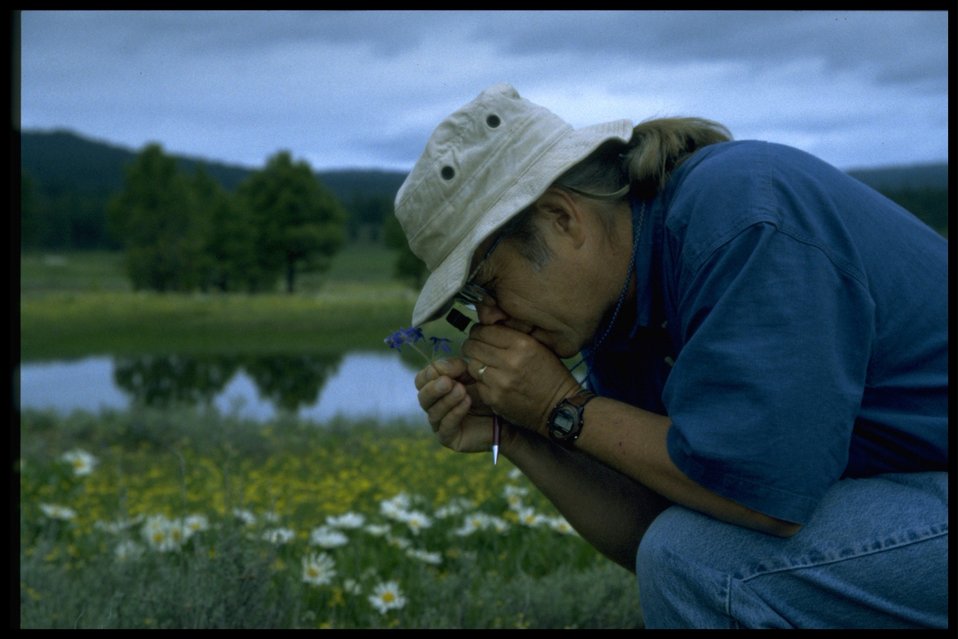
Photographing white-rayed mule's ears (Wyethia helianthoides).